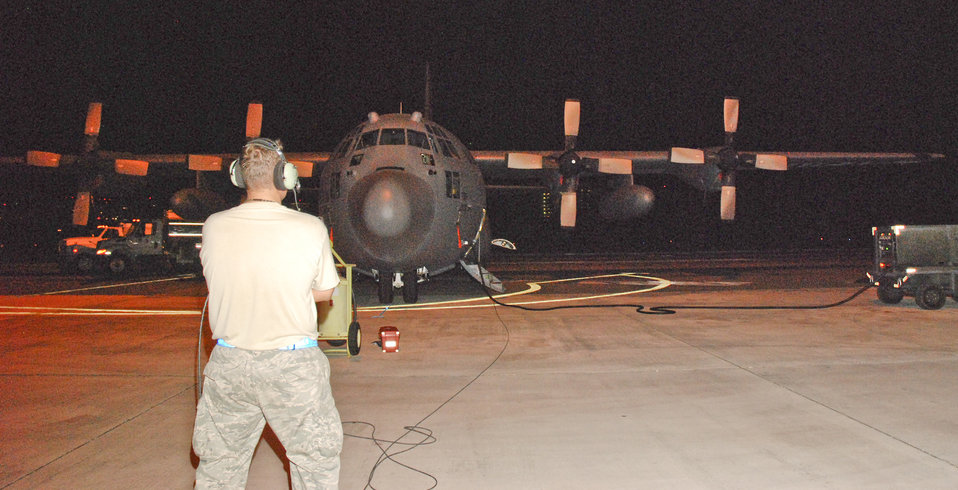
Aircrew, maintainers tackle Haiti relief effort

Tech. Sgt. Steve Pearson supervises the refueling of a C-130 Hercules, after its return from an Operation Unified Response mission Jan. 27, 2010, at Muniz Air Base, Puerto Rico. Sergeant Pearson is a 35th Expeditionary Airlift Squadron crew chief from the 302nd Airlift Wing, Peterson Air Force Base, Colo.